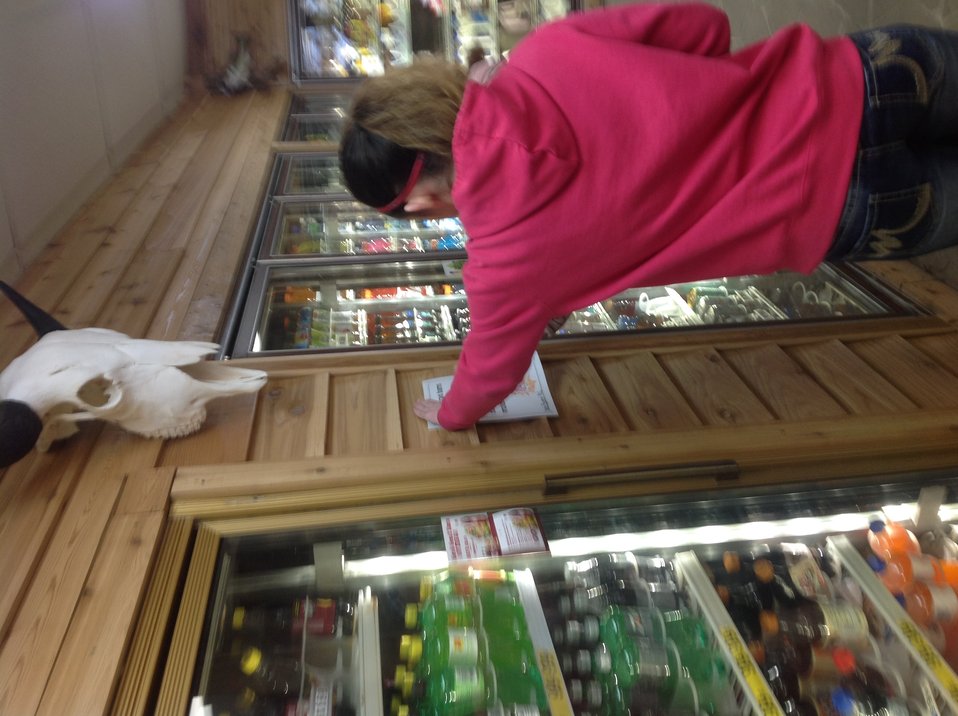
Making a Statement

Teenagers from the Van Buren County SAFE Coalition's, Youth Leadership Council (YLC) in Keosauqua, Iowa participate in various events during National Drug Facts Week, 2014.